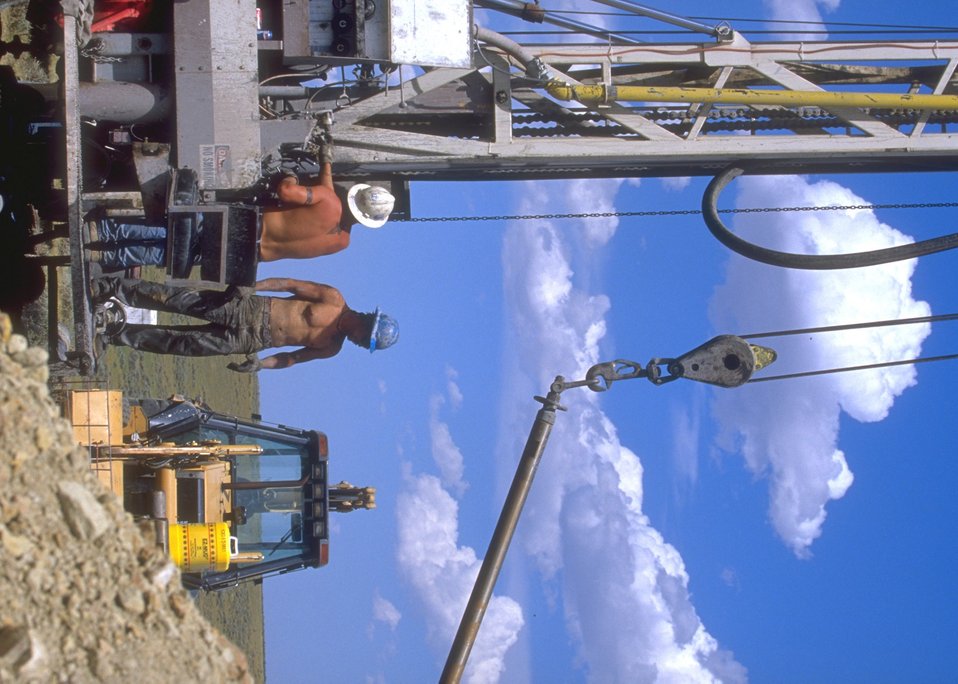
Drill site for coal bed methane, Buffalo Field Office.